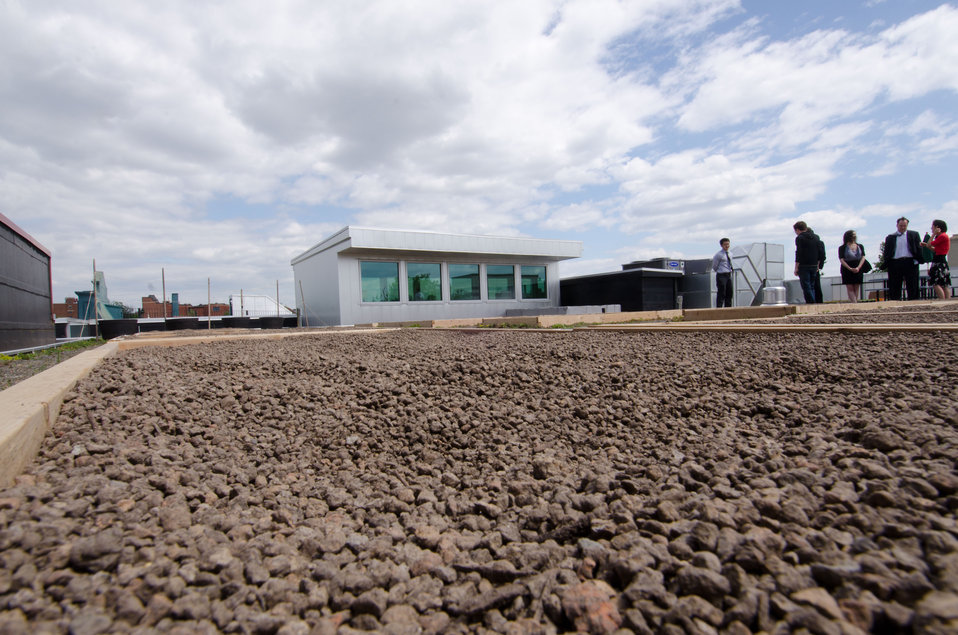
Rooftop vegetable garden is ready for planting at Bread for the City in Northwest Washington, DC, on Friday, April 29, 2011. The garden features specialized soil made of organic and inorganic material for rooftop gardens. The 30 wooden planters are about 4 inches tall but are not separate from the soil covering the roof, so there is a 10' depth to the plant in the boxes. Ground cover plants are already on site and await a team of volunteers to plant them in the walkways to retain moisture and help keep the soil temperature stable. This will be the largest of this kind in the Metro DC area. In addition to supplementing the fresh vegetable given to the community, it will also allow local residents to grown produce that is not normally marketed in this area.